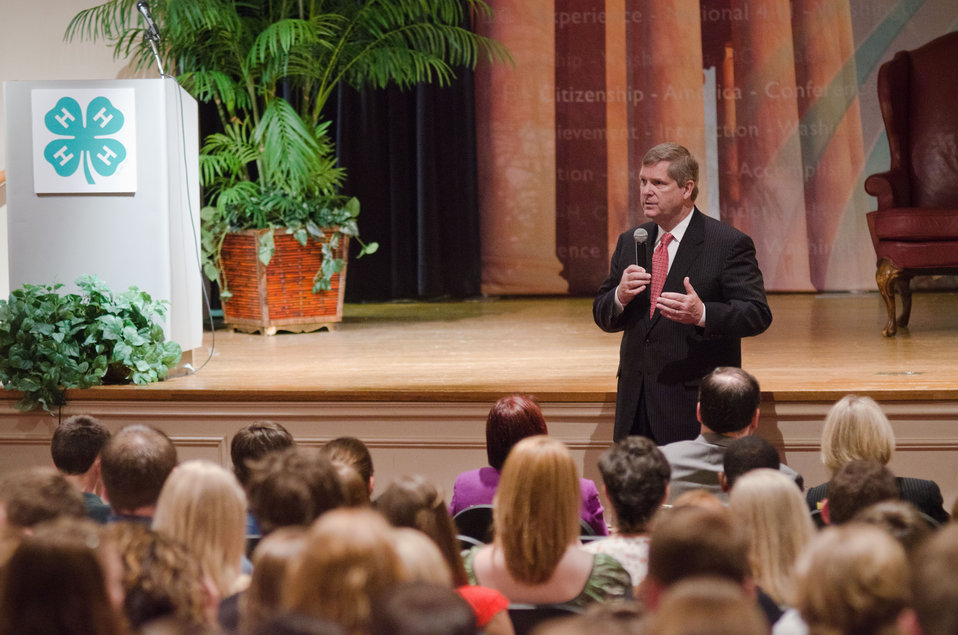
Agriculture Secretary Tom Vilsack speaks with 4-H members at the National 4-H Youth Center in Chevy Chase, MD, on Monday, March 26, 2012. 'For almost 100 years, USDA and 4-H have partnered to produce some of our nation's best and brightest, including farmers and ranchers who have supported the American economy and put food on our tables,' Vilsack said. 'You all are tomorrow's leaders. We need you to think big, innovate and help tackle the important challenges standing between us, a stronger middle class and a stronger nation.'